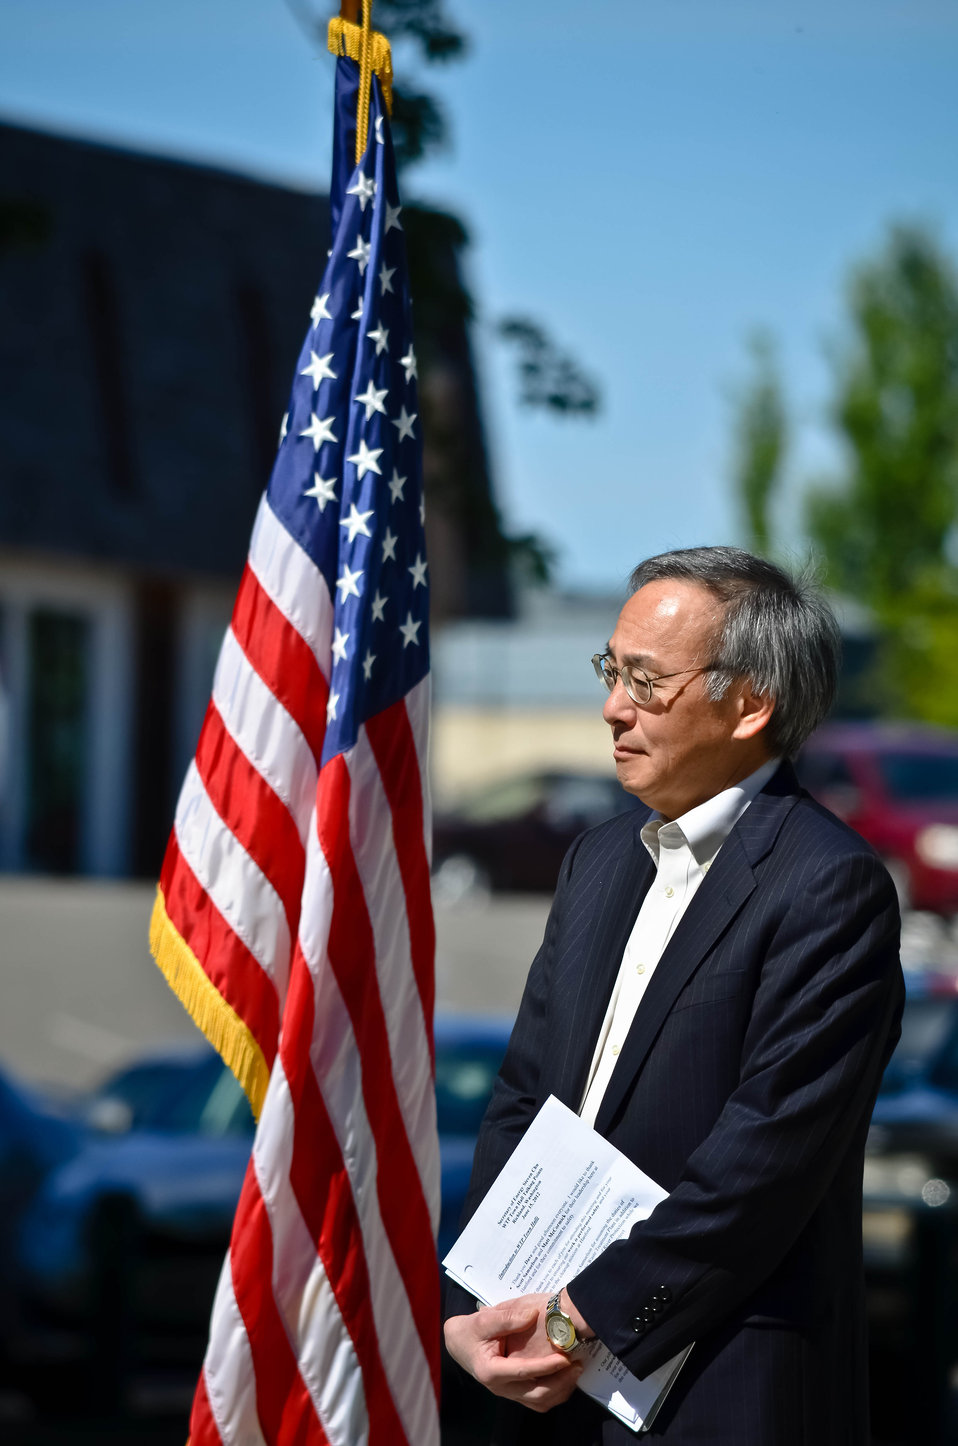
SECRETARY CHU HANFORD ALL EMPLOYEE MEETING 2012

DOE Secretary Chu speaks to hundreds of Hanford Site employees during a meeting on June 15, 2012.